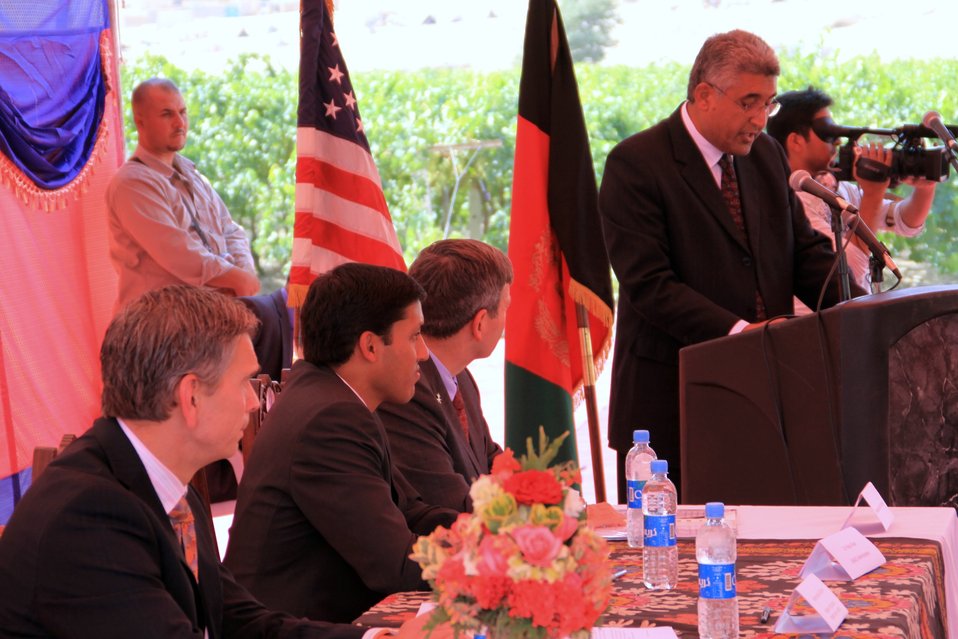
Badam Bagh Farm